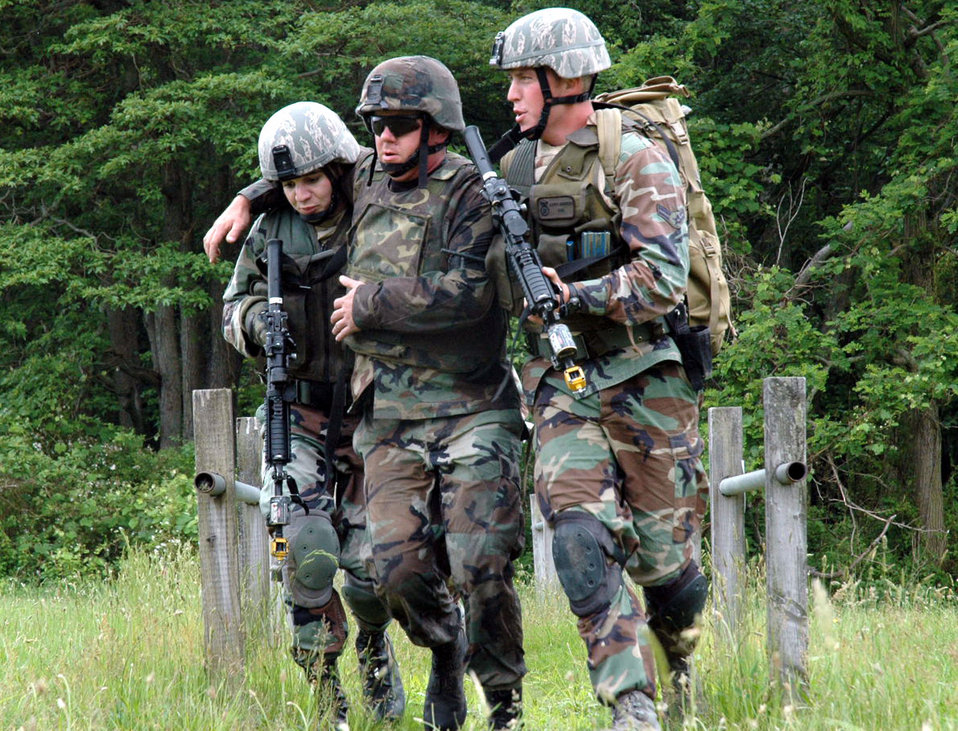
U.S. Air Force Expeditionary Center: Phoenix Warrior Training Course

1st Lt. Yuliya Buquoi and Airman 1st Class Charles Bryant, assist Staff Sgt. Michael Richmond, playing the role of a victim during combat first aid training June 5 at Fort Dix, N.J. Lieutenant Buquoi is assigned to the 88th Security Forces Squadron, Wright-Patterson Air Force Base, Ohio and Airman Bryant is from the 30th SFS, Vandenburg Air Force Base, Calif.